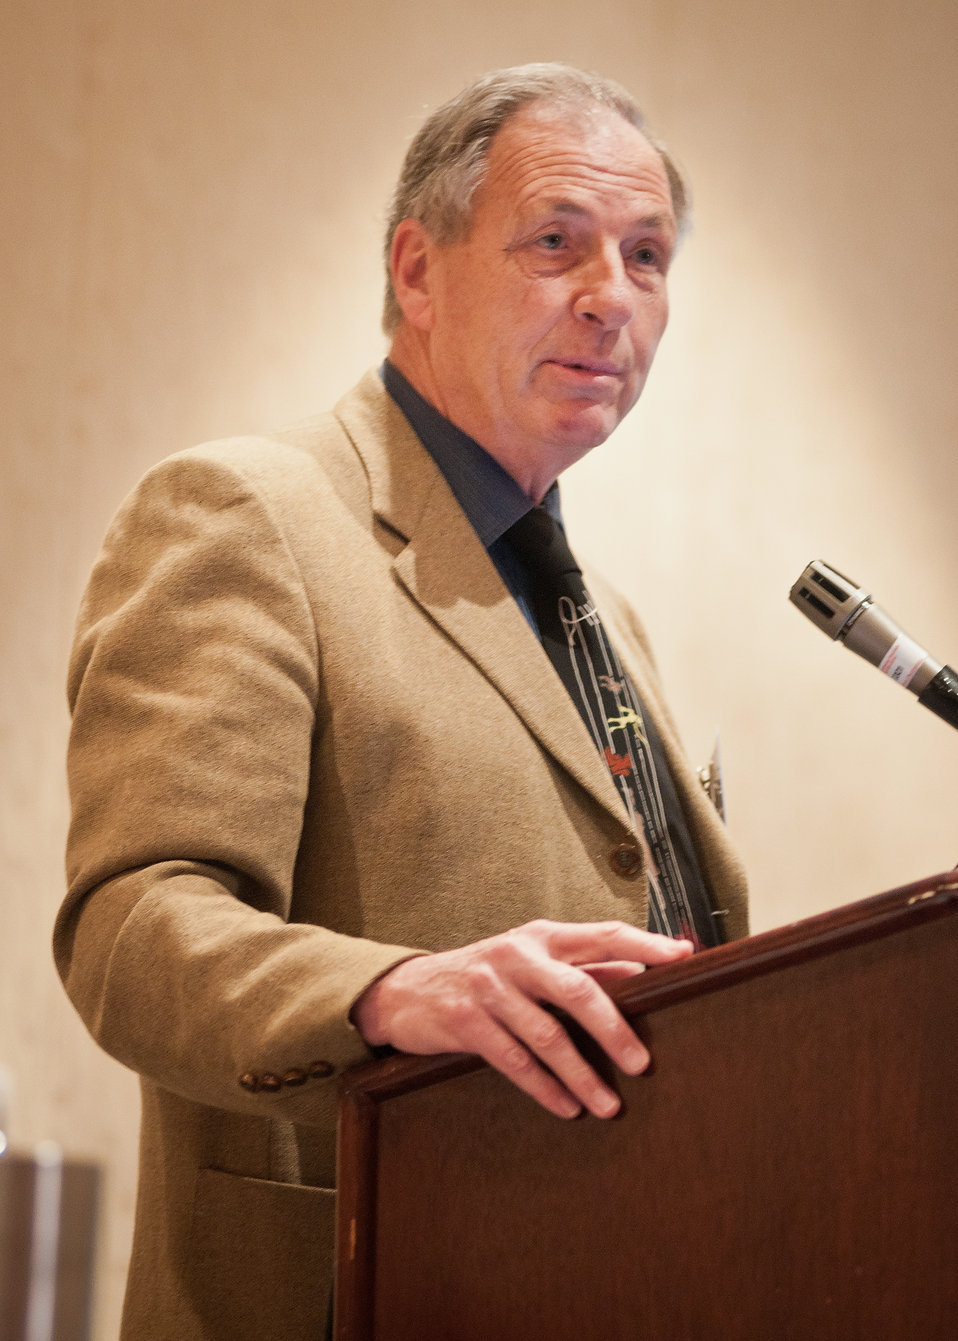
Ken Richards, Research Manager (retired), Canadian Genetic Resource Program, Plant Gene Resources of Canada, Agriculture and Agri-Food Canada, Saskatoon Research Centre Saskatoon, Saskatchewan Alberta, Canada spoke at the Global Food Security afternoon breakout session at the 2012 Agricultural Outlook Forum, “Moving Agriculture Forward, Growing, Innovating and Celebrating 150 Years” held at the Crystal gateway Marriott Hotel Arlington, Virginia, Friday, February 24, 2012. The session discussed and reviewed challenges associated with feeding a growing world population with a currently strained resource base.